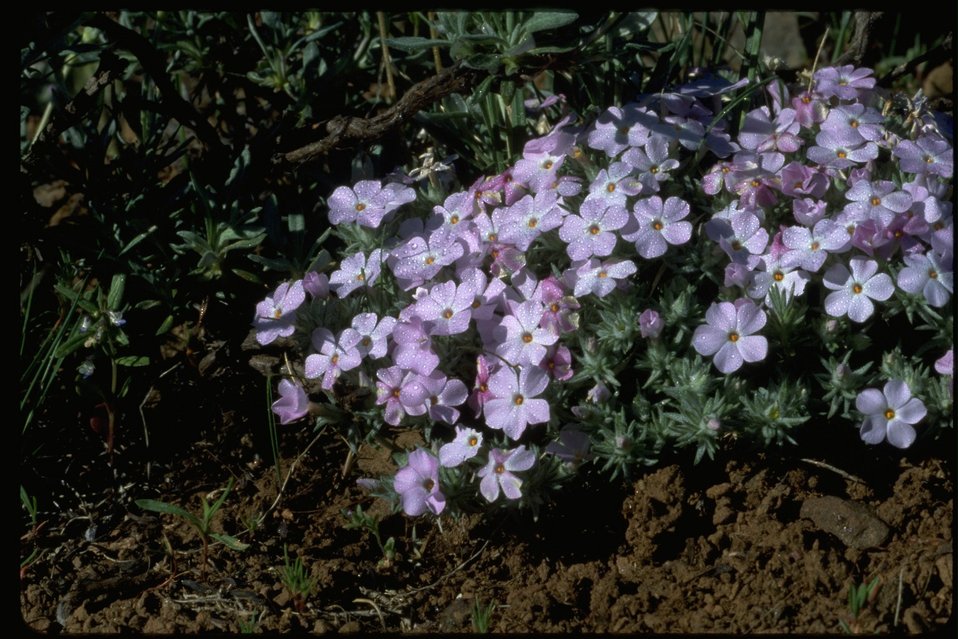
Medium shot of Phlox wildflowers.